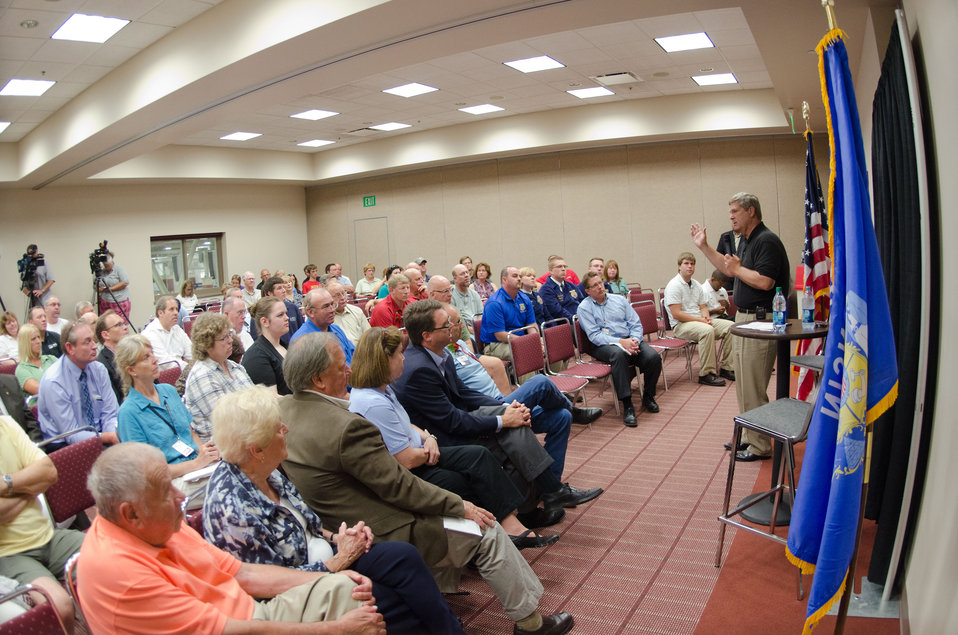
Agriculture Secretary Tom Vilsack speaks at the White House Rural Forum at the Wisconsin State Fair, in West Allis, WI, on Thursday, August 4, 2011, to businesses and community leaders, farmers and ranchers to explore ways federal, state and local officials can work together to improve economic conditions and create jobs. The forum is part of a series of White House Rural Roundtables that are being held across the country this summer with senior Administration officials.